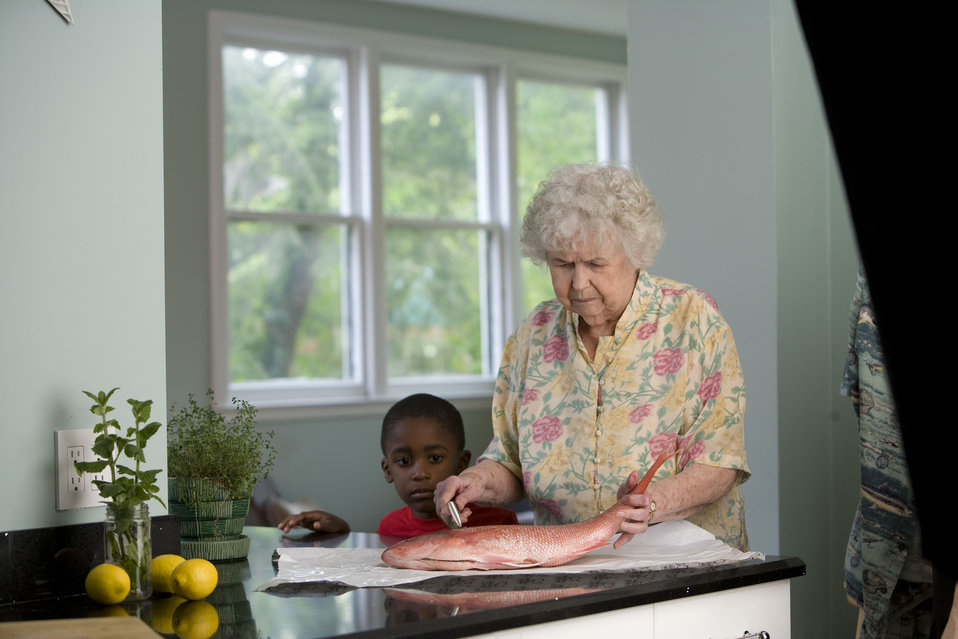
Here, an elderly woman was in the process of preparing a fresh fish on her clean kitchen counter, while a young African-American boy watched. Teaching this youngster how to carefully process fresh fish is an important skill he will hopefully put to good use as he grows up.